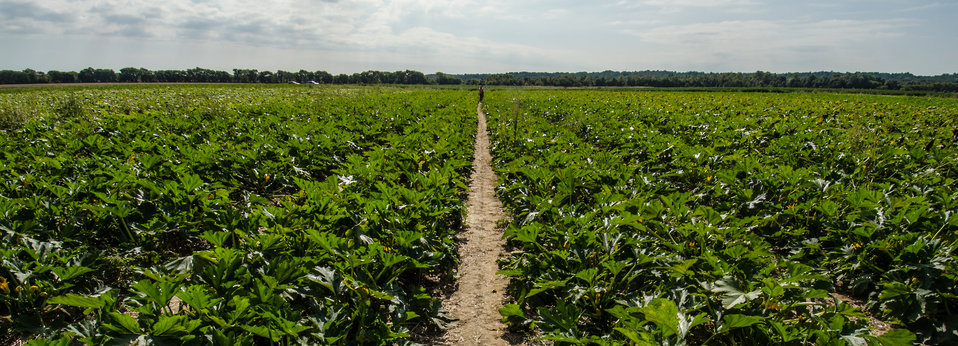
Kirby Farms, a third-generation century old family farm, in Mechanicsville, VA, just outside Richmond, is a year round operation, that covers 500 acres, and generates produce and grains, on Friday, Sept 20, 2013. Today’s harvest is green zucchini squash. 200 acres of the farm are devoted to eggplant, spinach, beets, tomato, Jalapeno peppers, melons and a variety of greens. Soybeans and small grain are grown on the remaining 300 acres. The fertile Virginia soil and their management practices, allows Kirby Farms to double and triple crop yields with rotational crop selection. Wholesalers, who buy from this farm, sell the produce to major supermarkets in the Mid-Atlantic region, from North Carolina to Maryland. Restaurants in the local area prepare and serve the local bought produce to patrons in the Richmond metropolitan area.